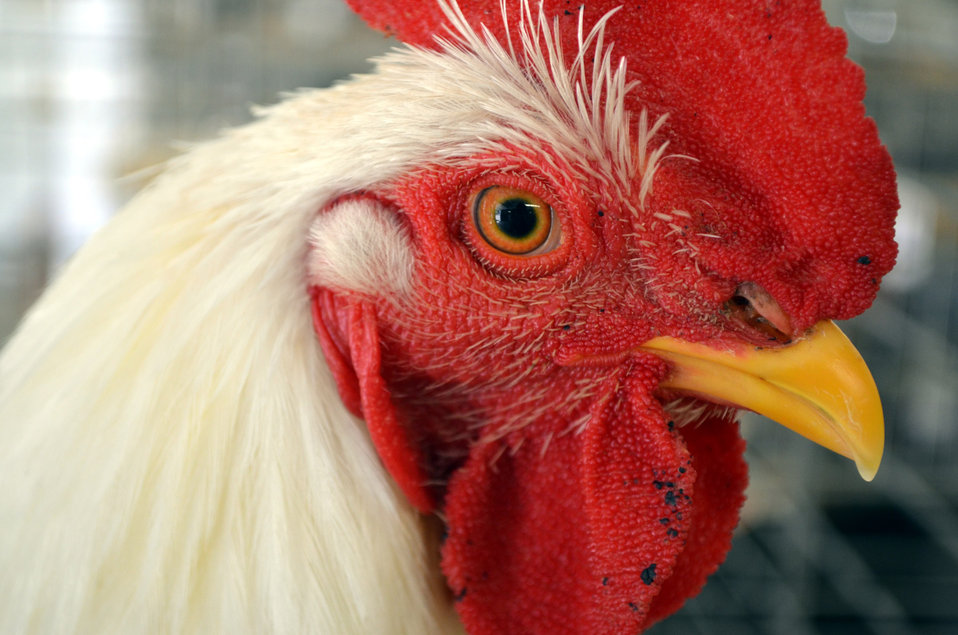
Rooster 2

Rooster looking.